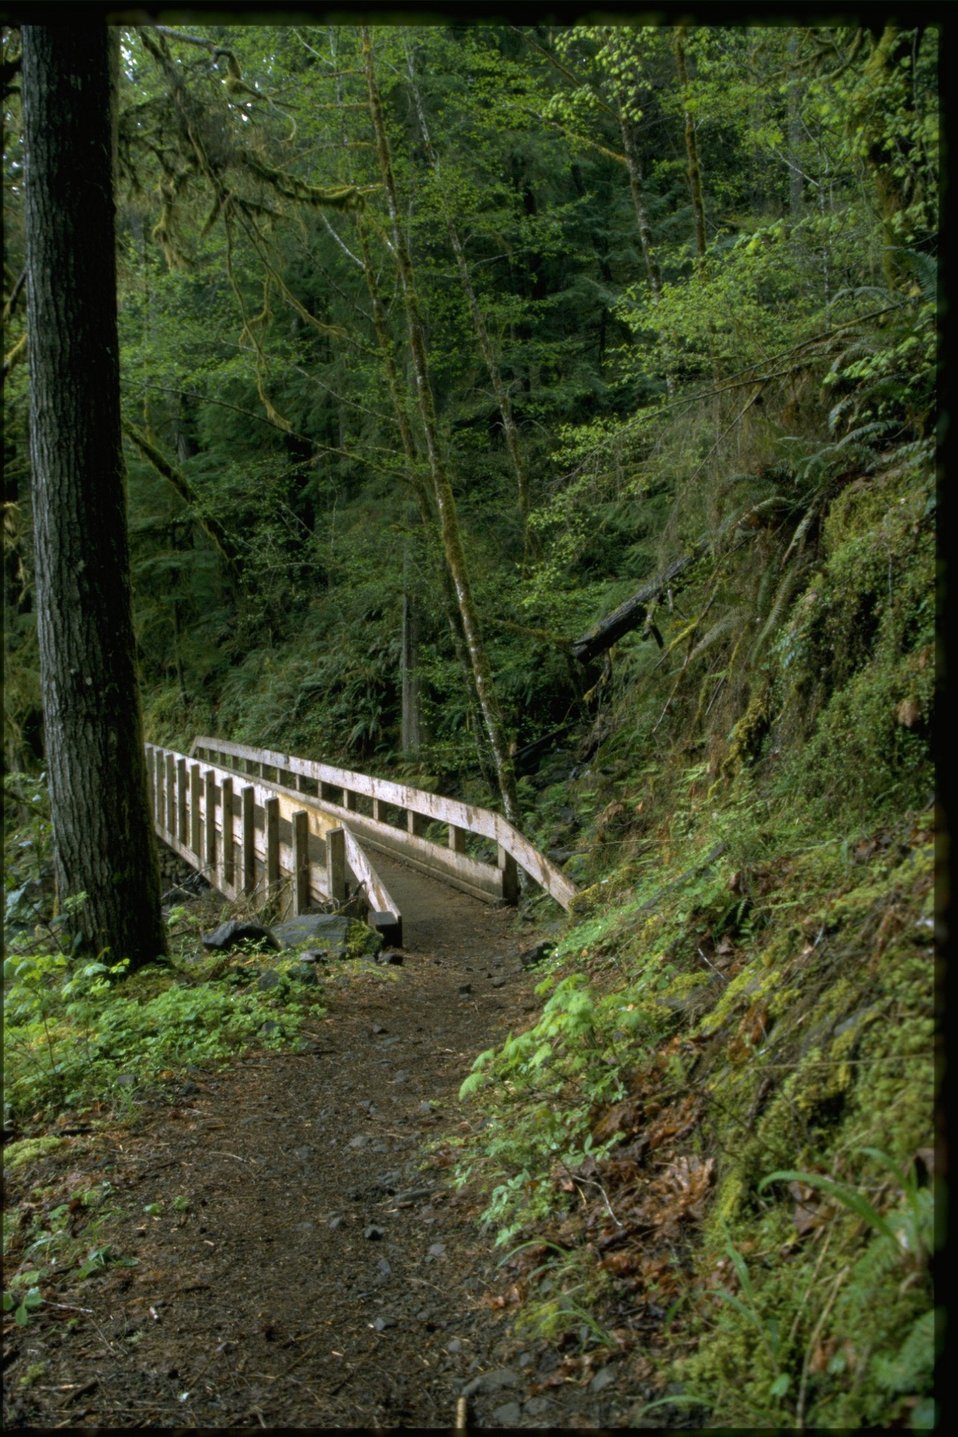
Trail leading to bridge in Swiftwater area.